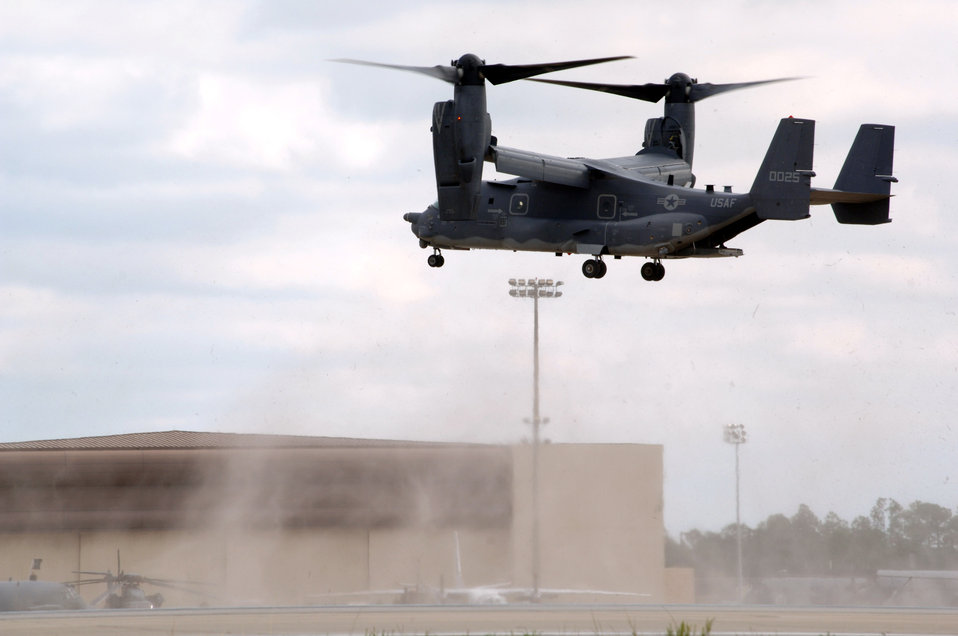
Heritage to horizons

The CV-22 Osprey hovers over the Hurlburt Field, Fla., flightline during its unveiling ceremony Nov 16. The arrival of the CV-22 to Air Force Special Operations Command is part of Hurlburt Field's Heritage to Horizon commemoration, reflecting on the heritage of air commandos, reaffirming the commitment to the war on terrorism and resolving to continually expand capabilities. The commemoration also includes marking the re-designation of the 16th Special Operations Wing to the 1st SOW and the Air Force's 60th birthday.